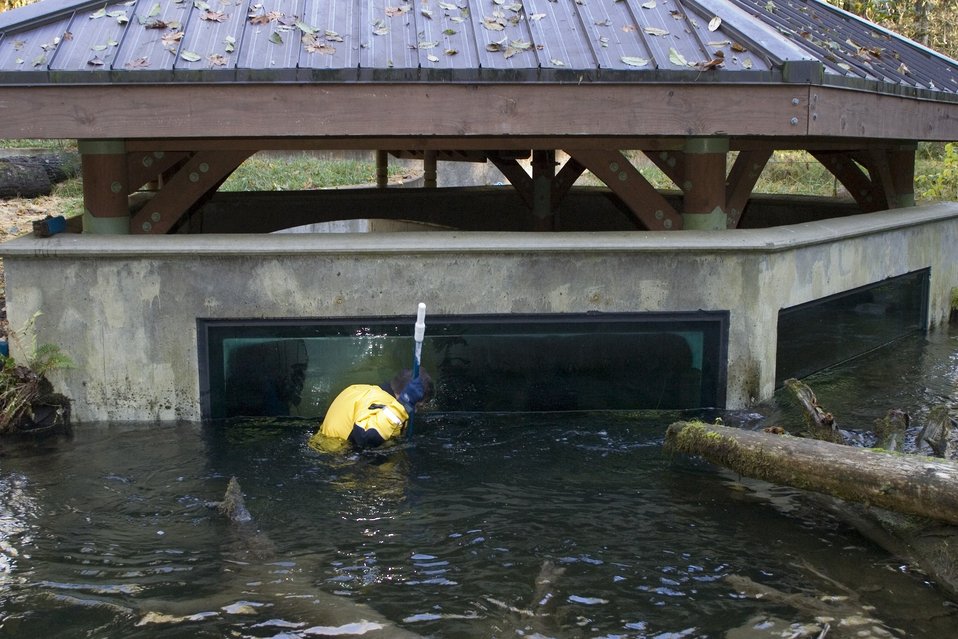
Kevin Davis, Wildwood Maintenance Worker, cleans the outside window of the salmon Viewing structure at BLM's Wildwood Recreation Area.